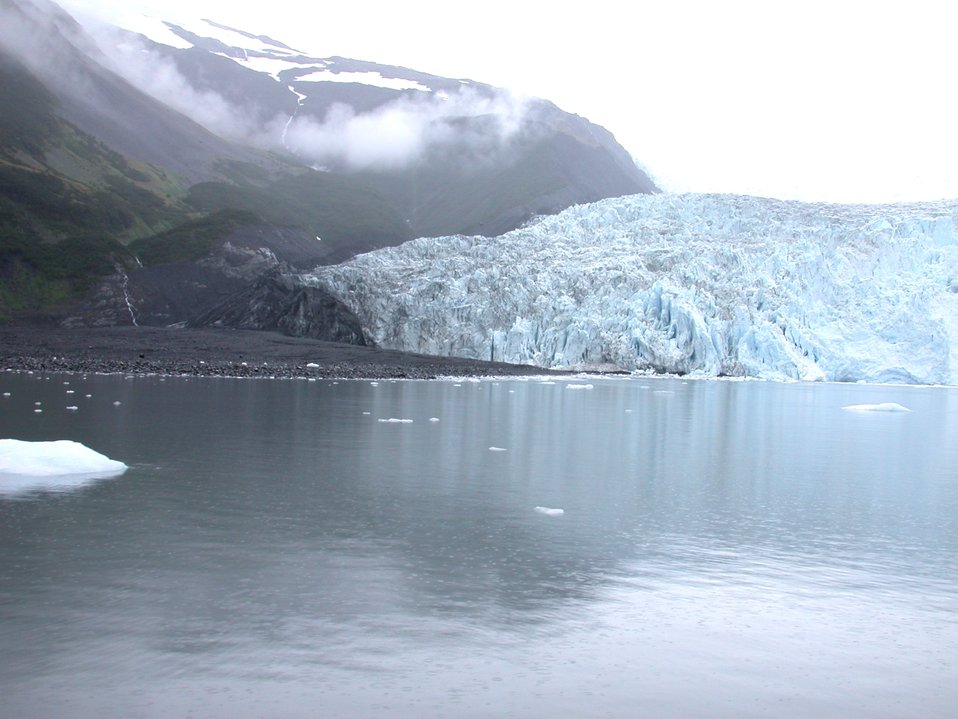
Aialik Glacier in Kenai Fjords.